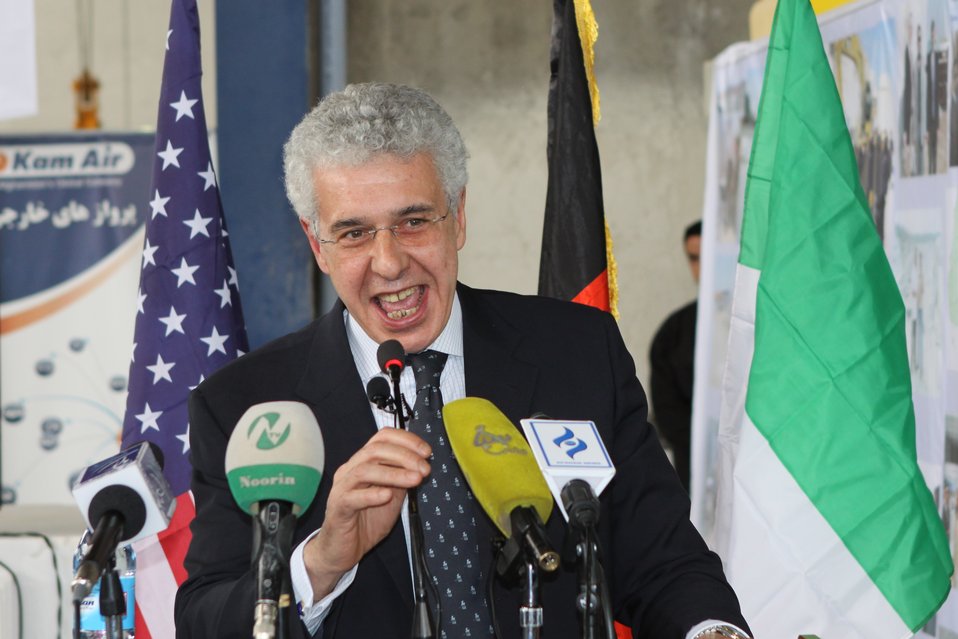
100525 Hirat Marble Conference 247